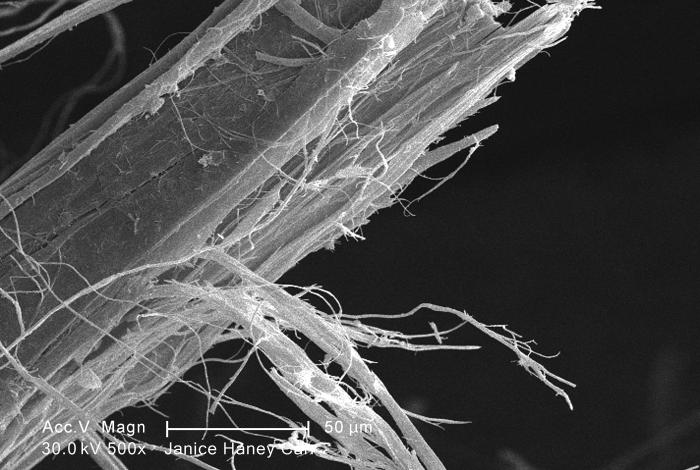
Under a moderate magnification of 500X, this scanning electron micrograph (SEM) revealed some of the microcrystalline ultrastructure exhibited by a piece of raw chrysotile, or white asbestos, which had been excavated from the Lowell Asbestos Mine on Belvidere Mountain, Vermont.